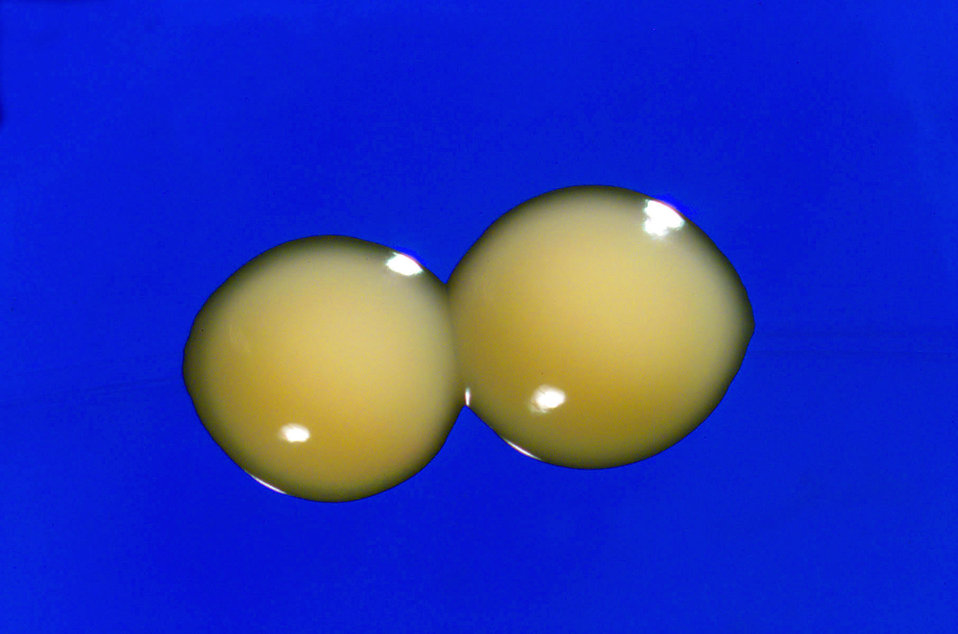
This image, which was photographed in 2005 using a blue filter, depicted a close-up perspective of Mycobacterium cosmeticum bacterial colonies of strain LTA-388T, growing on Middlebrook 7H10 agar, which is used primarily in the isolation of mycobacteria, as well as for the antimicrobial susceptibility testing of these organisms.What's in a Name?